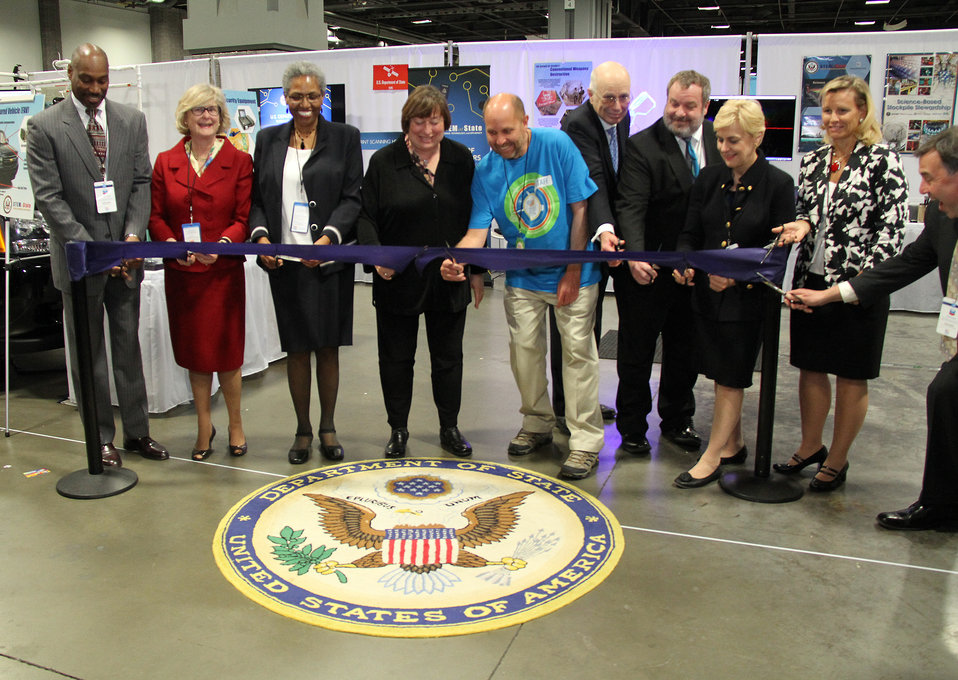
State Department VIPs Officially Open the State Department Exhibit at the USA Science and Engineering Festival

State Department VIPs cut the ribbon officially opening the State Department exhibit at the Department of State booth at the USA Science and Engineering Festival in Washington, DC on April 25, 2014.